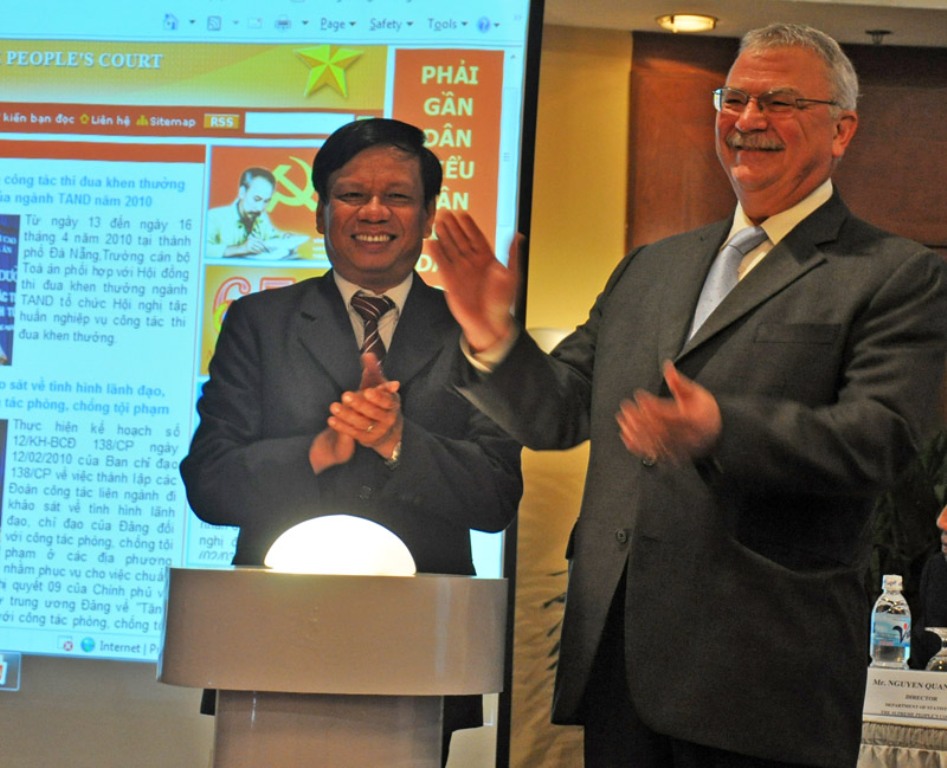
Ambassador Michael Michalak helps launch the Supreme People's Court web portal.